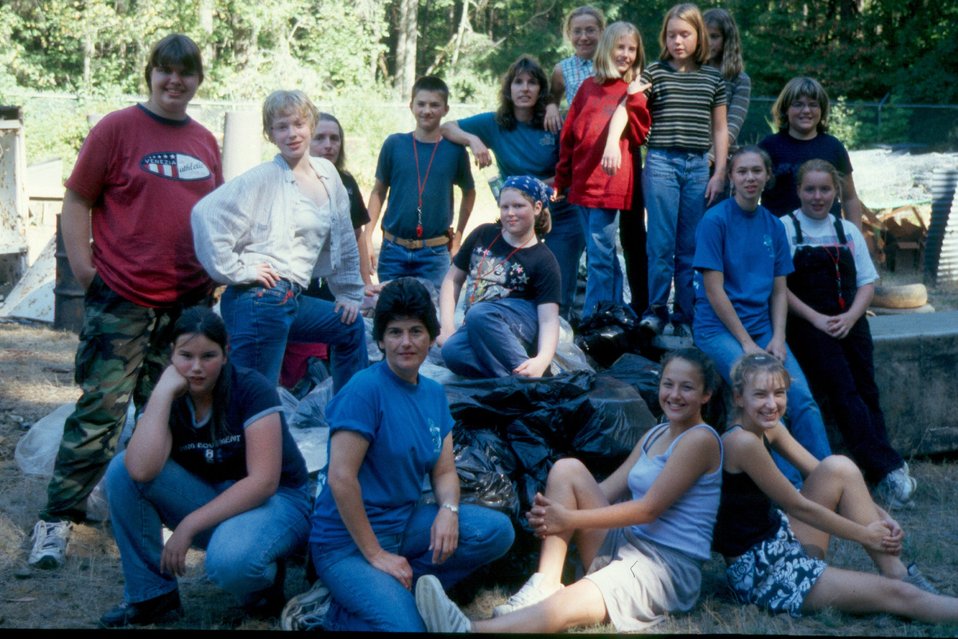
Junction City Scout Troupes,#203 & 334, at the end of the day